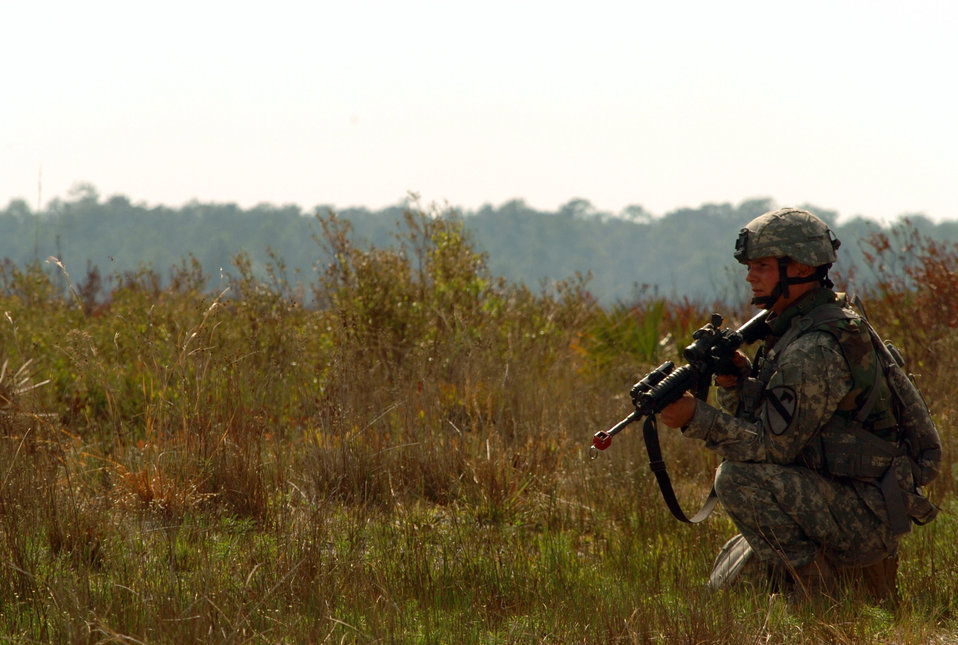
Atlantic Strike III

Pfc. Jeffrey Roman of the 1st Cavalry Division at Fort Hood, Texas, stands fast as snipers secure the area during training at Avon Park, Fla., on Wednesday, March 29, 2006, as part of Atlantic Strike III, a joint air and ground training event.